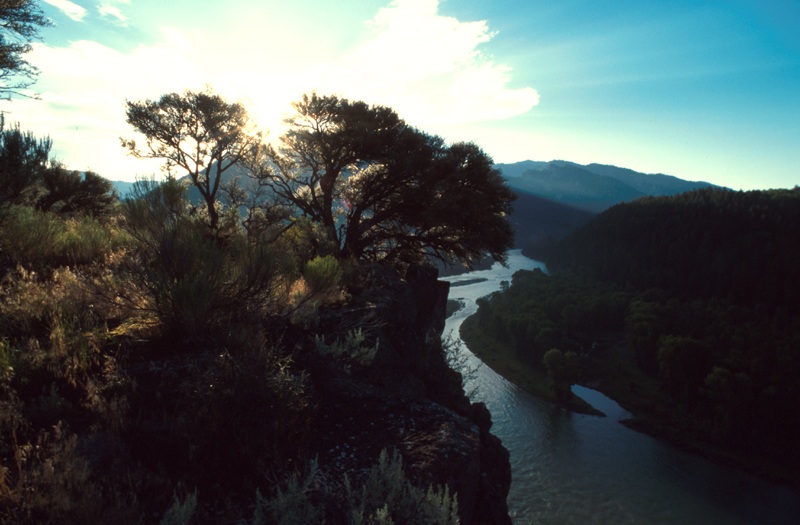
South Fork of the Snake River